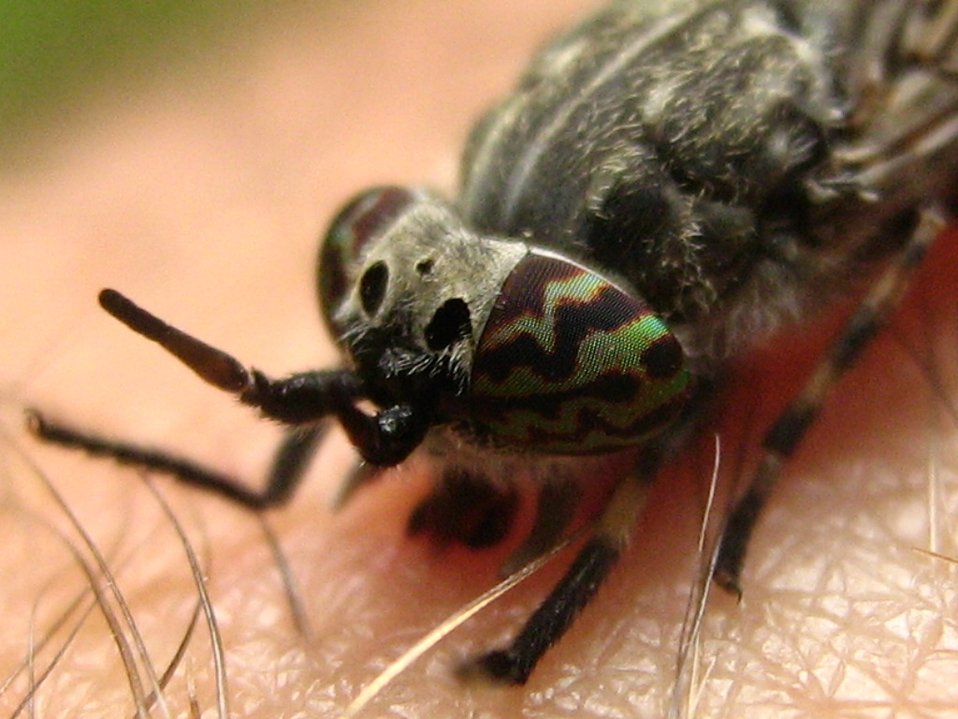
Deutsch: Haematopota pluvialis, die „Regenbremse“ oder „Blinde Fliege“ (die jedoch keinesfalls blind ist). Früher wurde sie wiss. Chrysozona pluvialis L. genannt. Fotografiert in einem Wald bei Nauen (Brandenburg). Die Facettenaugen zeigen das für diese Art typische Muster